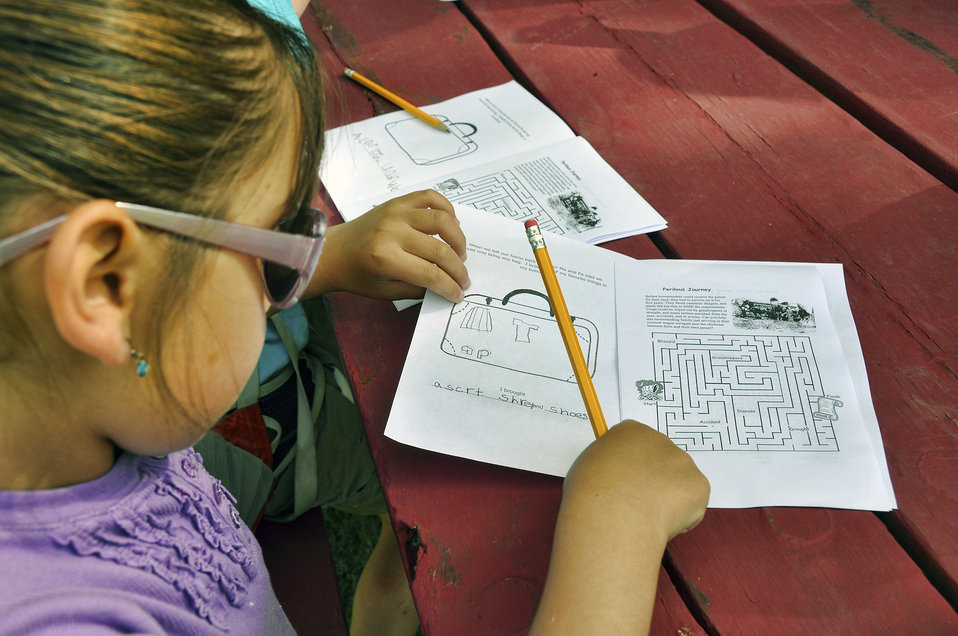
What Would You Pack?

As part of an educational lesson at the historic Miller House, students were tasked with listing what they would have packed as they moved out west to homestead and what they would have left behind.

Credit: USFWS / BJ Baker, National Elk Refuge volunteer